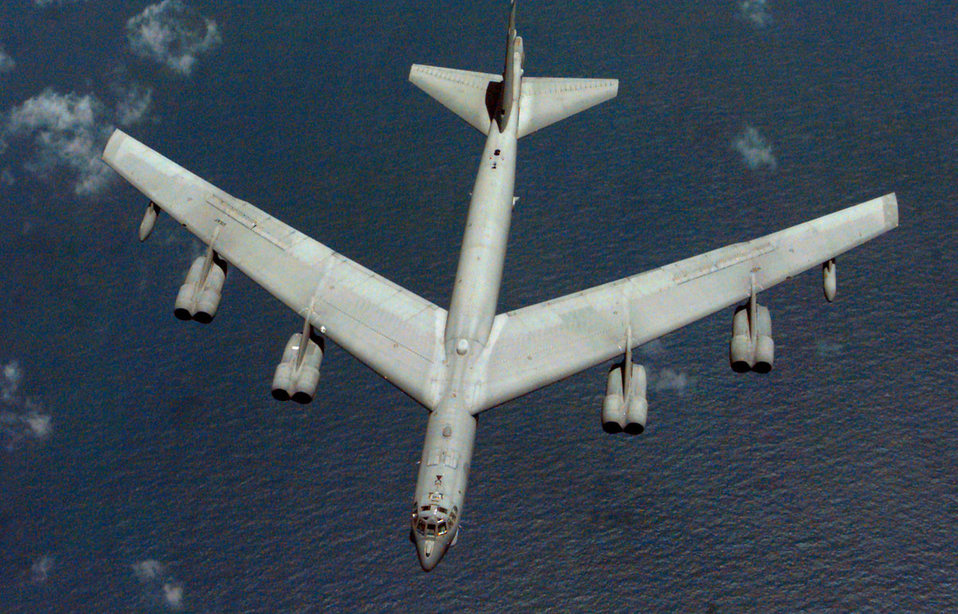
Buff top view

DIEGO GARCIA, British Indian Island Territory -- A B-52H Stratofortress from the 96th Bomb Squadron, Barksdale Air Force Base, La., deployed to the 2nd Air Expeditionary Group, Naval Station Diego Garcia, drops away after air refueling. The 96th Bomb Squadron and support personnel from the 2d Bomb Wing, Barksdale AFB, are deployed in support of Desert Thunder.